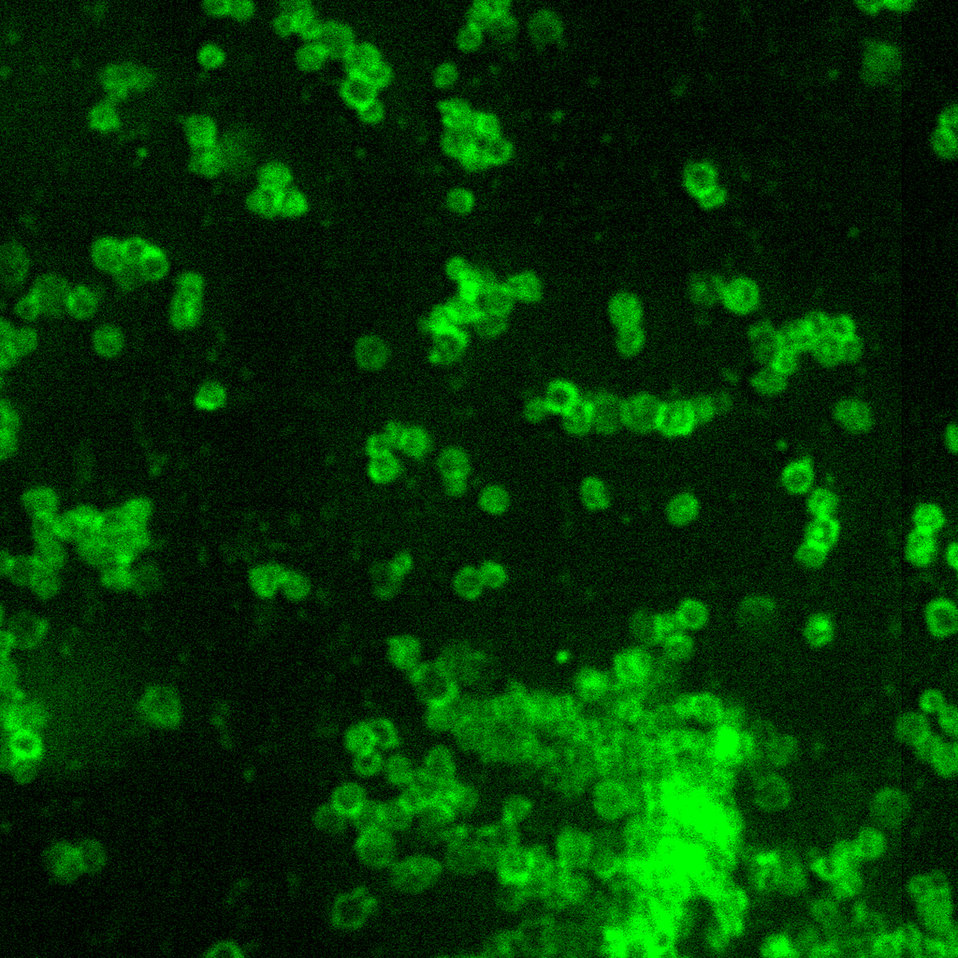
Francisella tularensis as seen with Direct Fluorescent Antibody Stain (DFA).